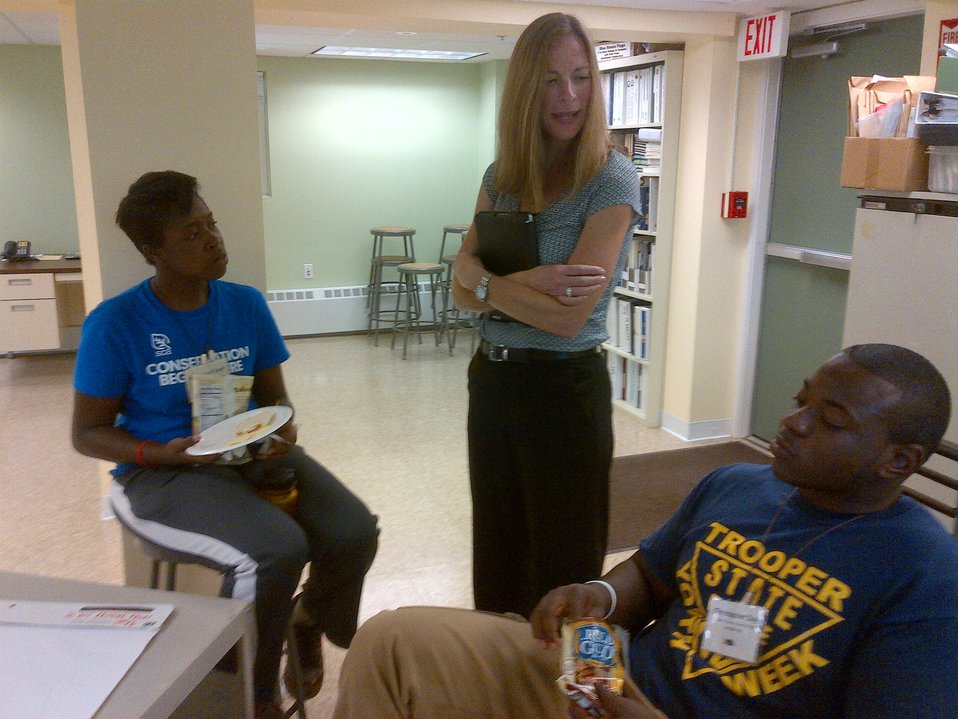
Wendi Weber Discusses Challenge Project with the Interns

Hawanicole and Chris, CDIP interns, speak with Regional Director, Wendi Weber, about their Challenge Project.